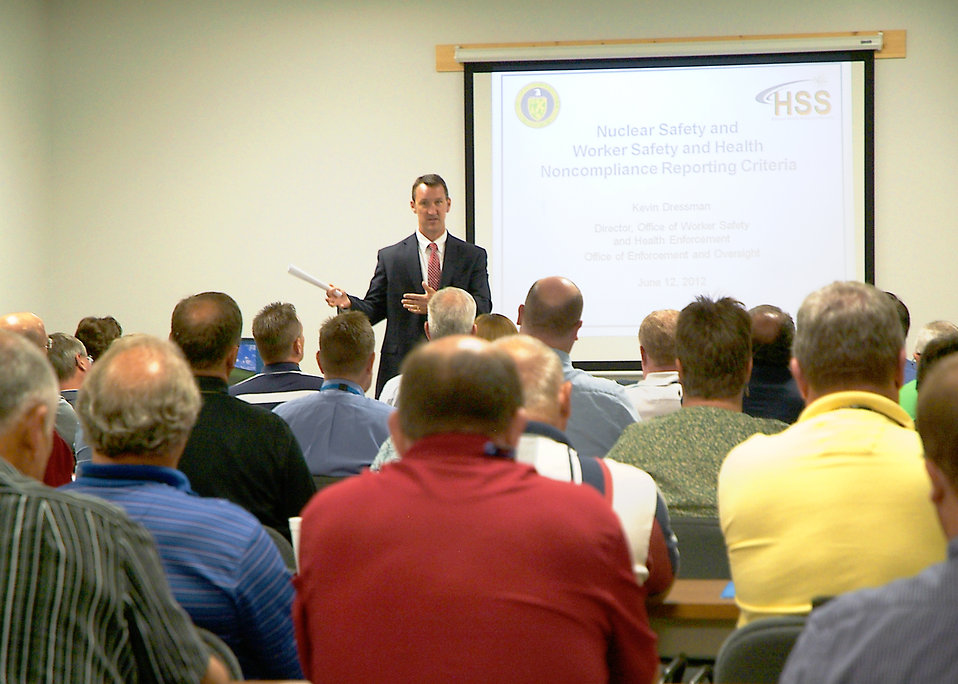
DOE HQ Review Focuses on Improved LATA Kentucky Worker Safety

Department of Energy Office of Health, Safety and Security headquarters representatives recently spent three days at the Paducah Site helping LATA Kentucky better identify and correct issues before they result in worker illness or injury.